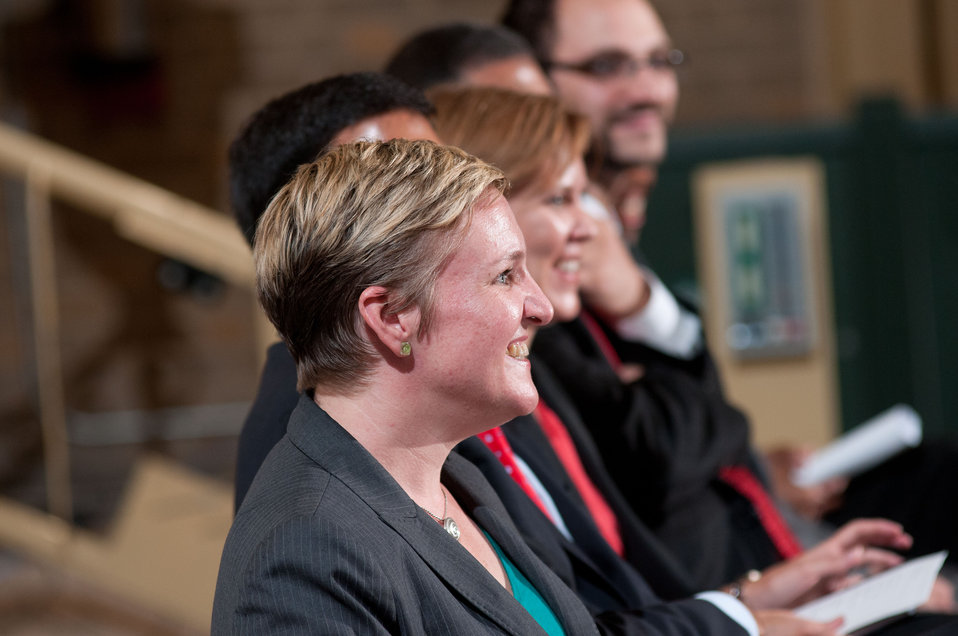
U.S. Department of Agriculture (USDA) Faith-based and Neighborhood Partnerships Acting Director Norah Deluhery and other speakers smile in reaction to a comment by Aman Chhipa, who delivered the call to prayer for the Iftar celebration, co-sponsored by the U.S. Department of Agriculture, U.S. Agency for International Development (USAID) and Islamic Relief USA, on Tuesday, August 7, 2012, in the USDA Whitten Building, in Washington, D.C. Ramadan is the month of fasting, intensive prayer, sacrifice and worship for Muslims around the world. Throughout this month, Muslims fast during the day, abstaining from consuming food from dawn to dusk and using this time to purify spiritually. Fasting reminds Muslims of the poverty and hunger suffered by many in the United States and worldwide. It is a connection with those who are hungry not through devotion, but through the many global factors that lead to hunger and famine. Iftar is the meal at which Muslims break their fast at sunset, usually by eating dates, according to the Prophetic tradition.